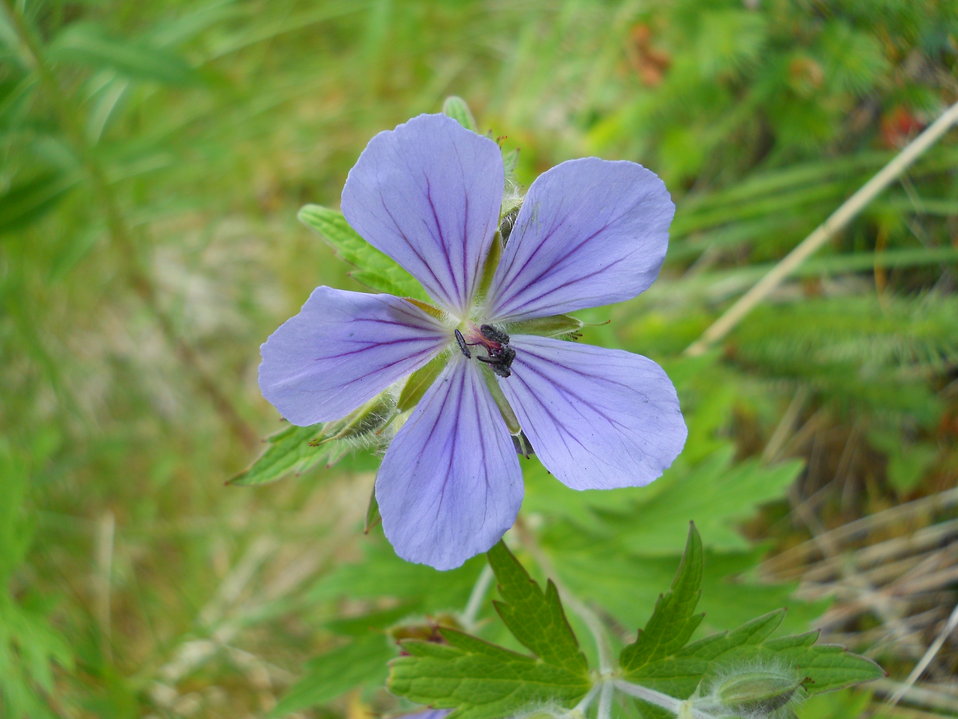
Wild Geranium

Credit: USFWS
Photo taken by a Salmon Camp participant during a nature photography activity.

Source and Contact: Kodiak National Wildlife Refuge